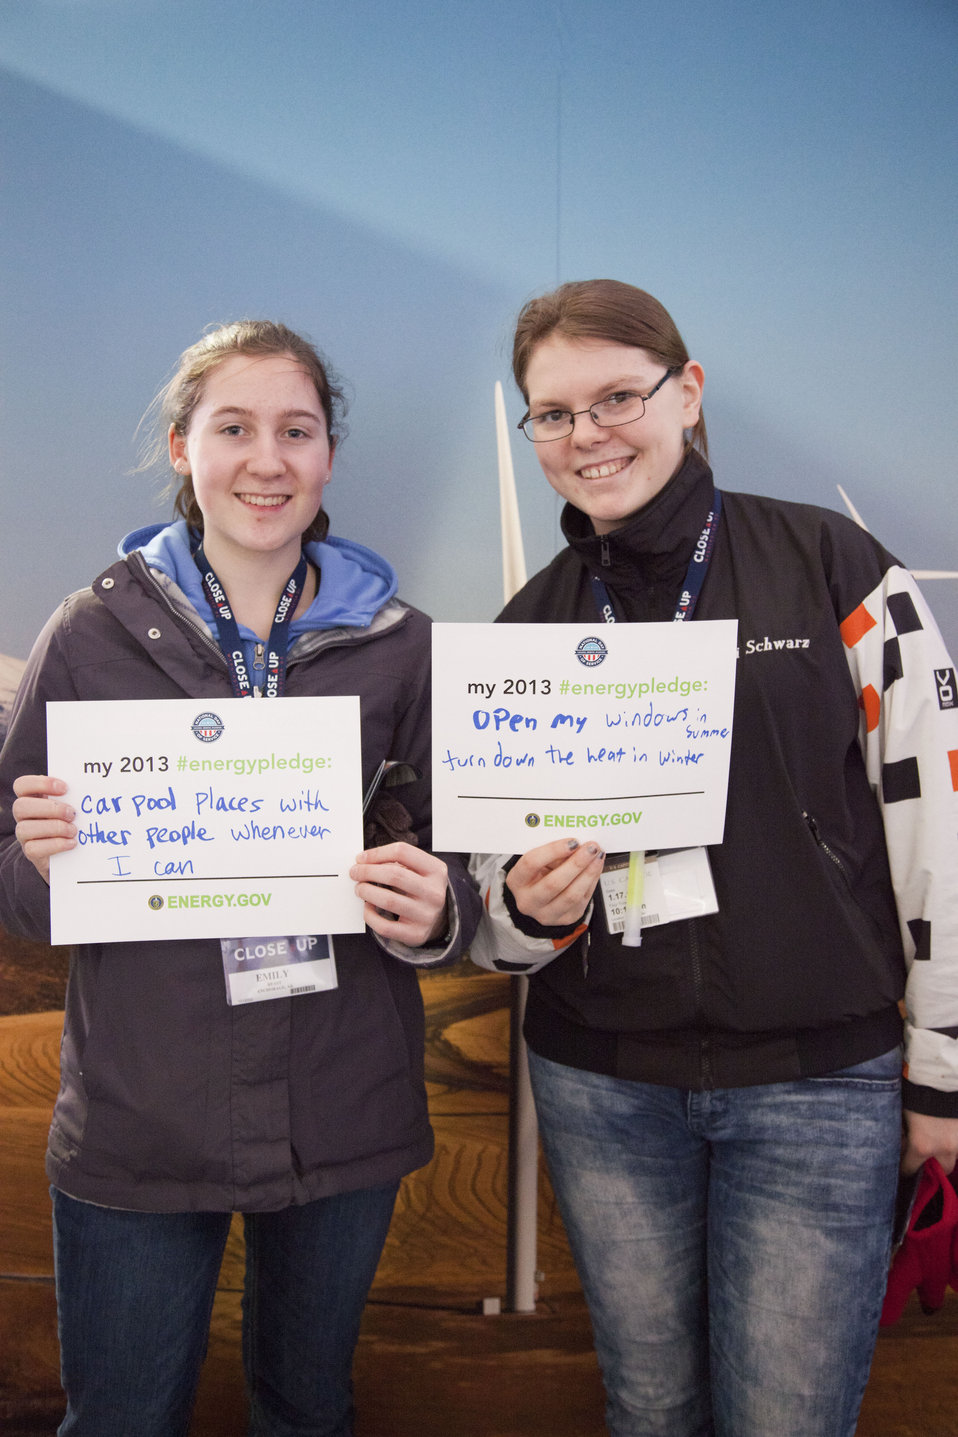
What's your #energypledge?